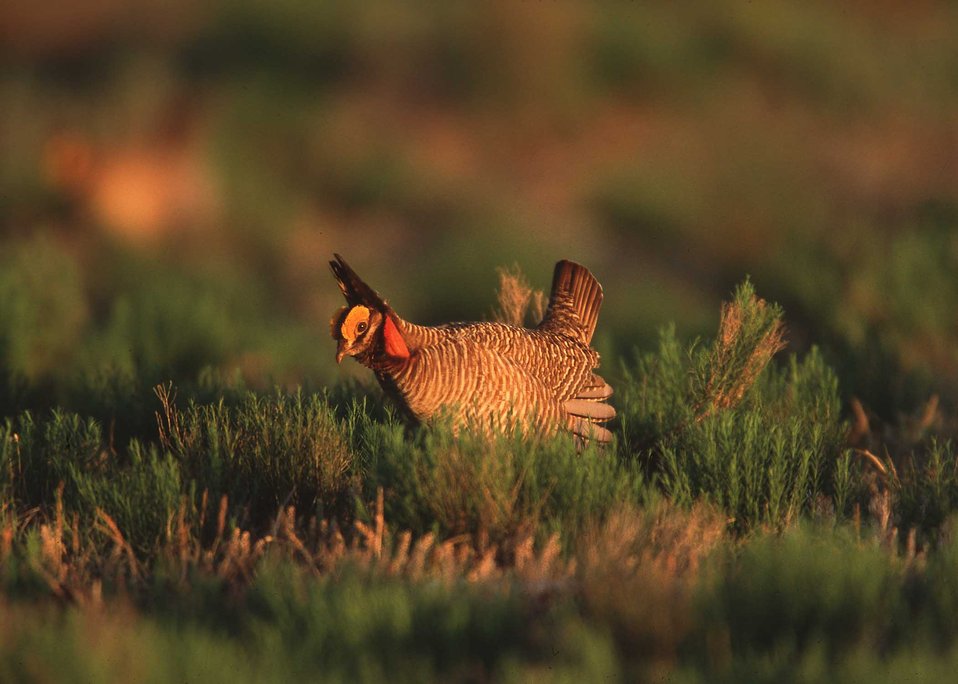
Lesser prairie chicken in Eastern New Mexico.